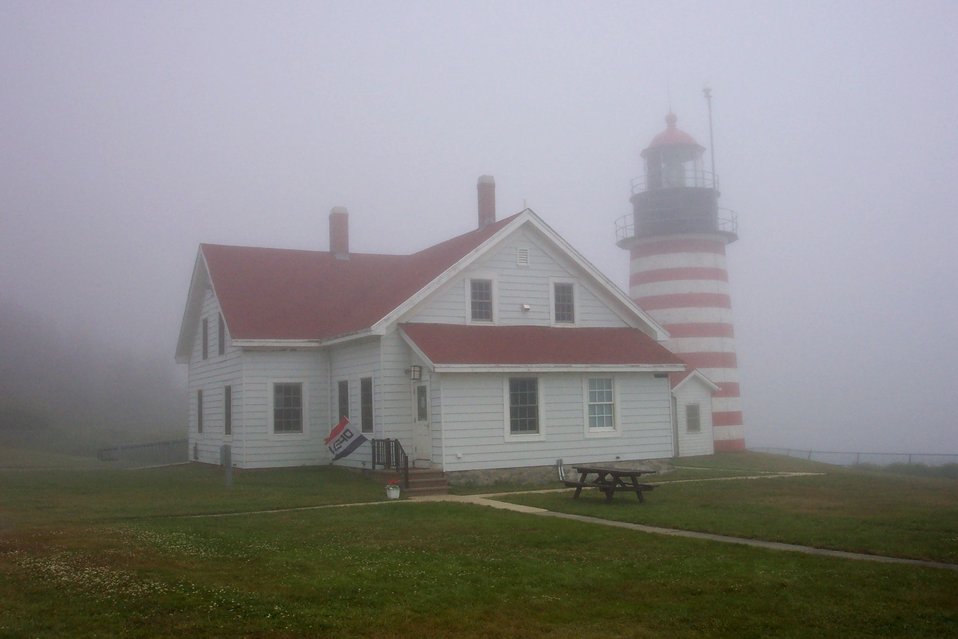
West Quoddy Head Lighthouse, the easternmost point in the contiguous United States.